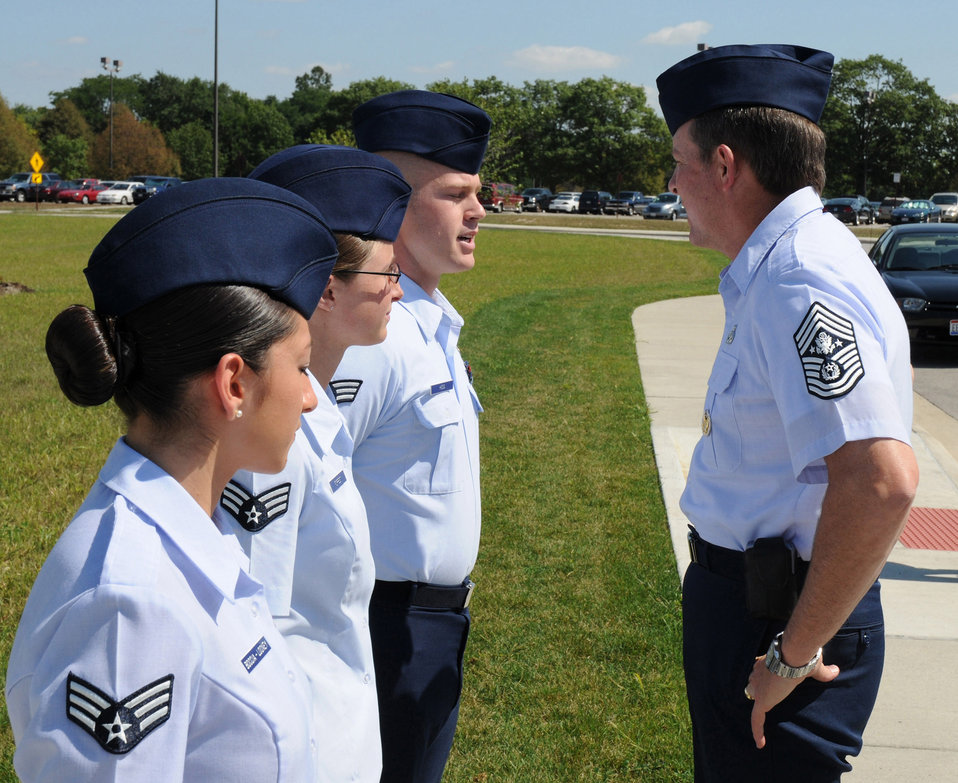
Straight from the chief

Chief Master Sgt. of the Air Force Rodney J. McKinley is greeted by three Airmen from the National Air and Space Intelligence Center during his Sept. 8 visit to Wright-Patterson Air Force Base, Ohio. The Airmen are Senior Airmen Felicia Boccia-Looney (from left), Kara Forrest and Gregory Hess. They were chosen to greet the chief as recent deployment returnees. During his visit, the chief visited with enlisted, officer and civilian employees and answered questions from Airmen. He is the 15th chief master sergeant of the Air Force.